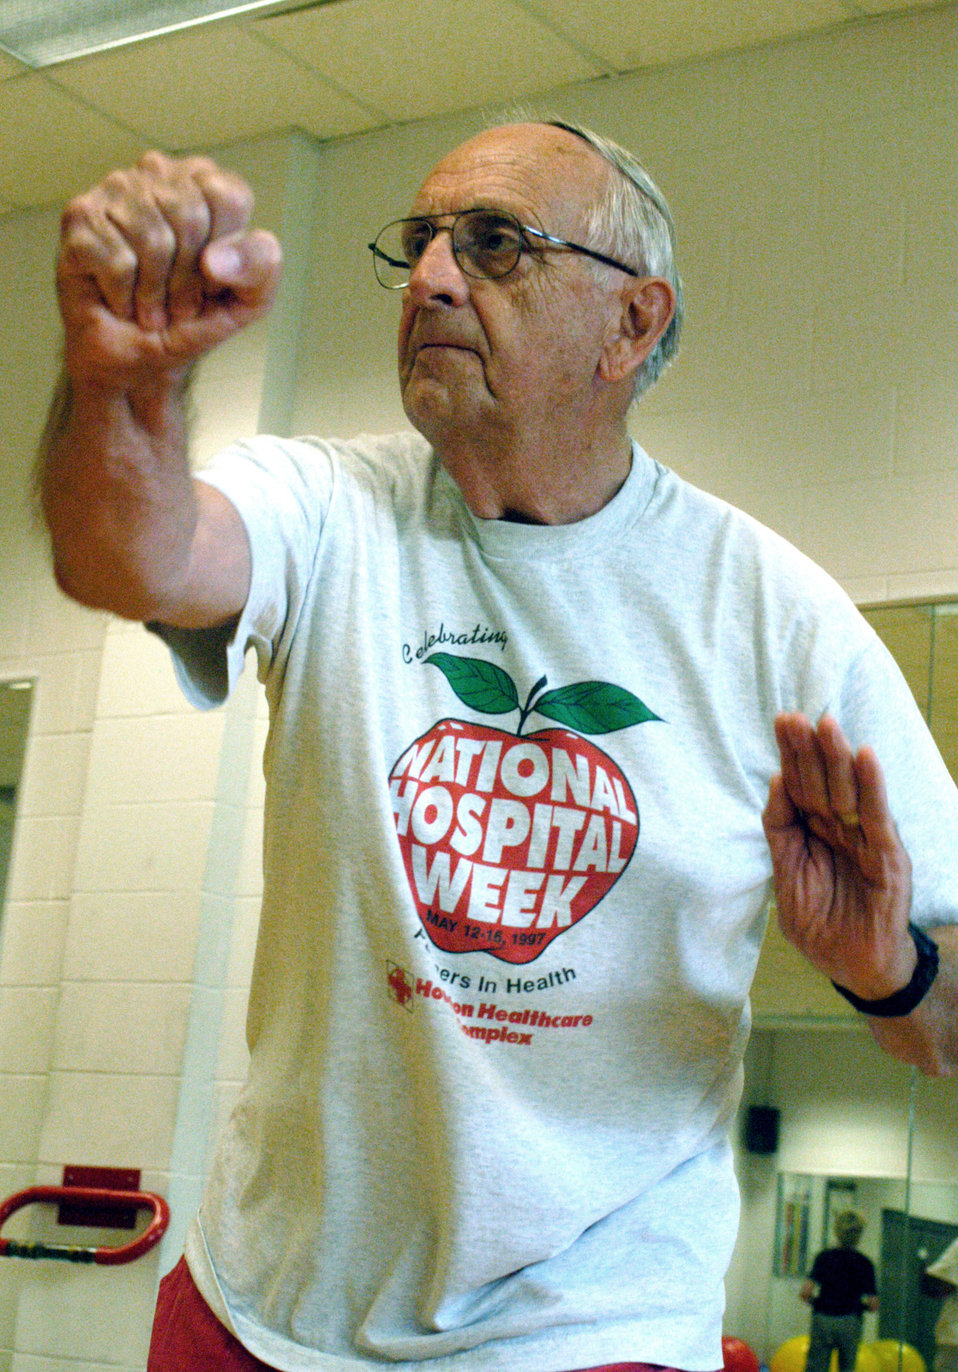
Kicking, punching their way to health

ROBINS AIR FORCE BASE, Ga. -- Gerald Jackson pulls a punch during the senior Tae Bo class at the fitness center here. The class incorporates boxing moves into a high-energy aerobics routine, modified with balancing poles to ensure participants' safety.